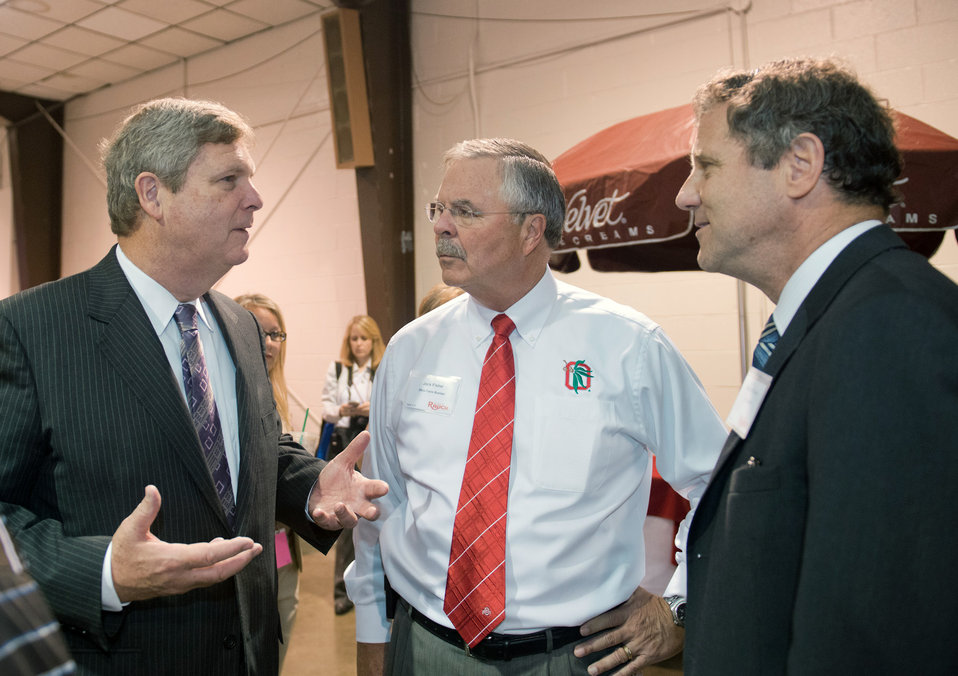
Agriculture Secretary Tom Vilsack (left), Executive VP for the Ohio Farm Bureau Jack Fisher (middle), and Senator Sherrod Brown (right) meet at the Ohio Agricultural Council Hall of Fame Breakfast and talk about agriculture and the impacts of the drought in Columbus, OH on Friday, August 3, 2012.